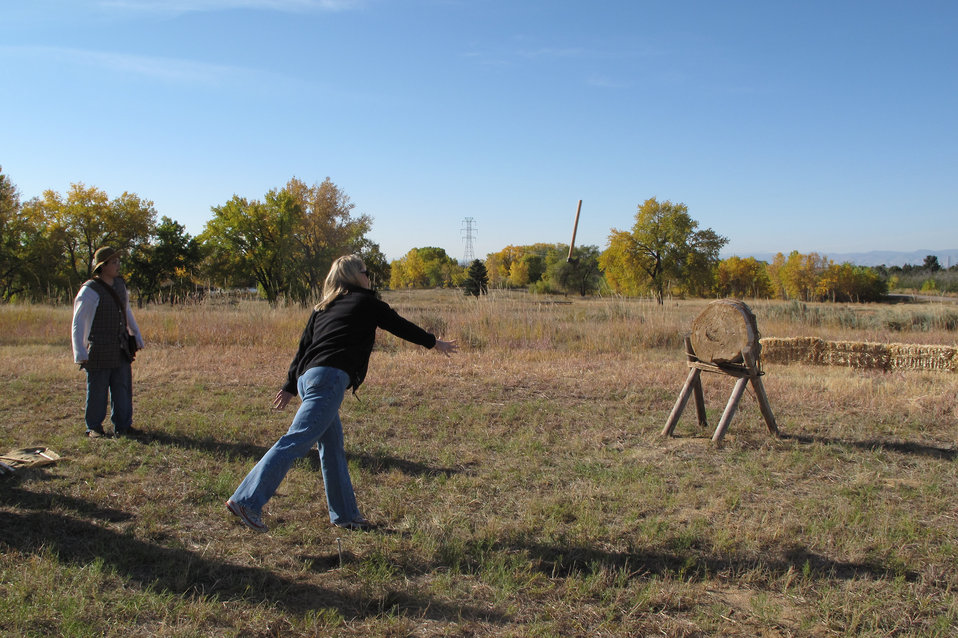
Hatchet Throwing

Noreen Walsh, Region 6 Deputy Director throws hatchet during the Refuge Round-Up at the Rocky Mountain Arsenal.